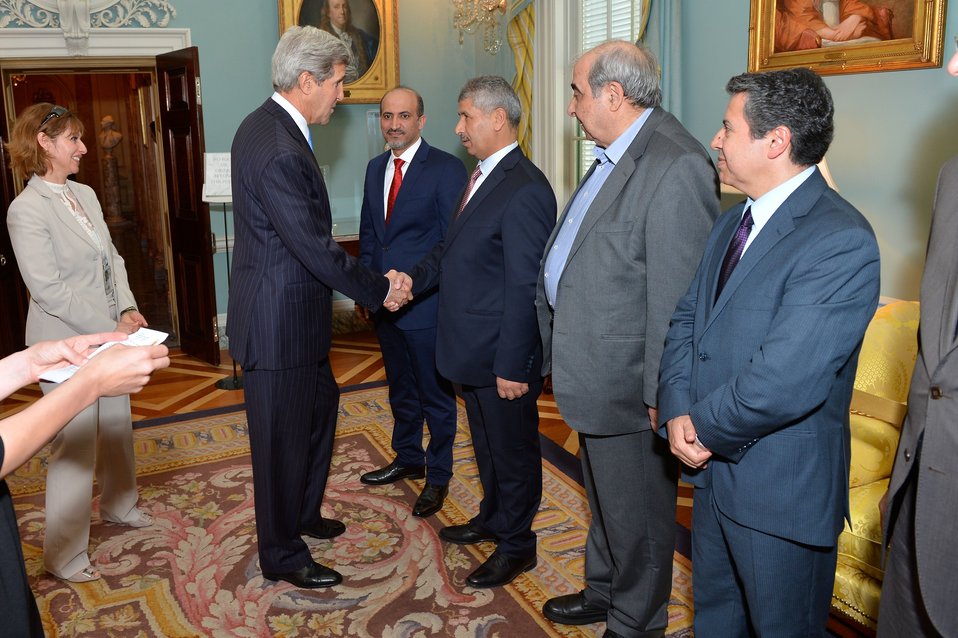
Secretary Kerry Welcomes Syrian Opposition Coalition Members

U.S. Secretary of State John Kerry welcomes Syrian Opposition Coalition members to the U.S. Department of State in Washington, D.C., on May 8, 2014.